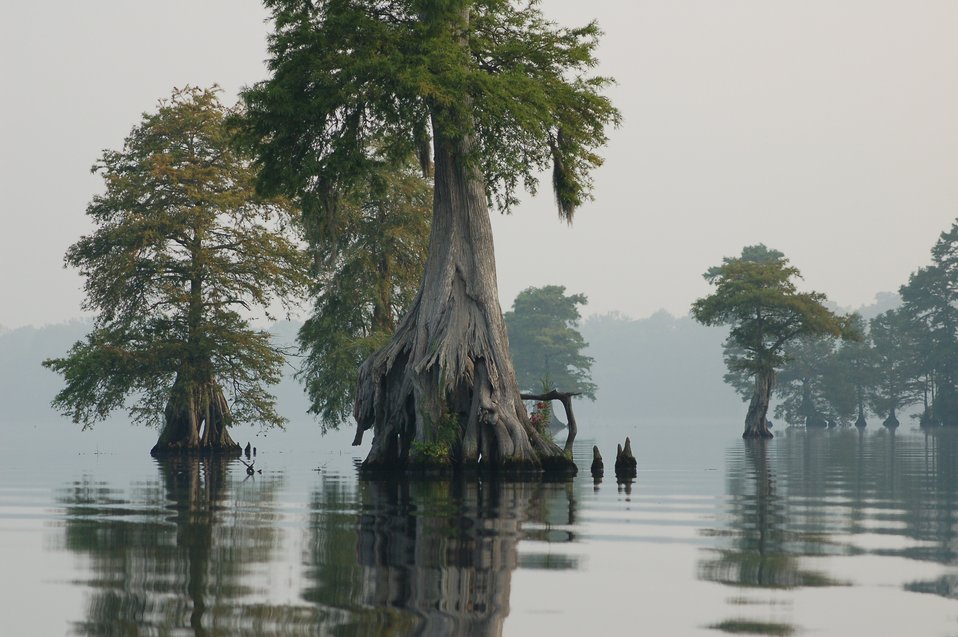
Photo of the Week - Great Dismal Swamp National Wildlife Refuge (VA)

Photo of the Week - 05/04/2010

Lake Drummond at Great Dismal Swamp National Wildlife Refuge in Virginia.